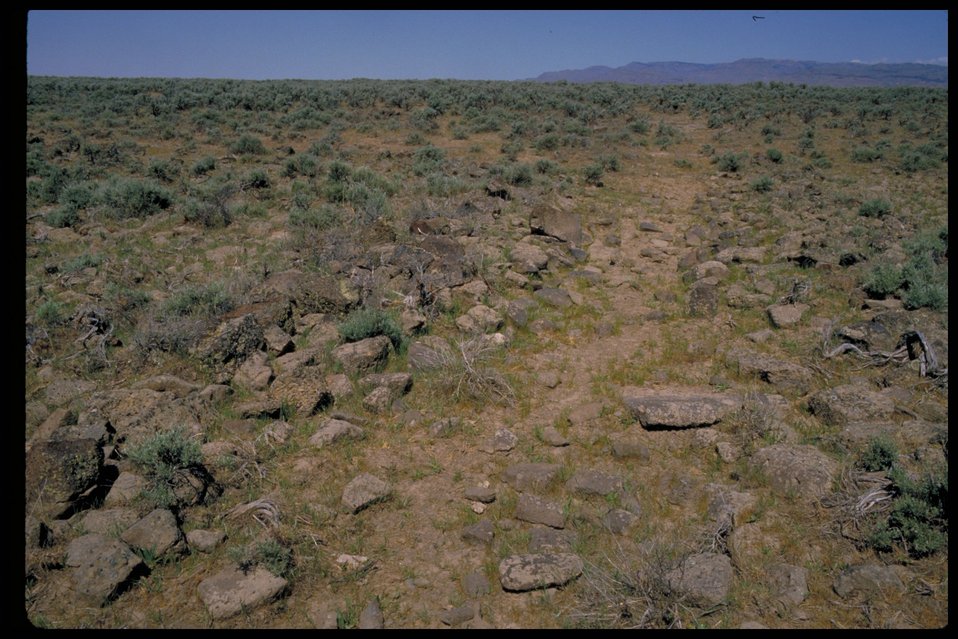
Oregon Trail south of Emigrant Trail Reservoir Lower Snake River District